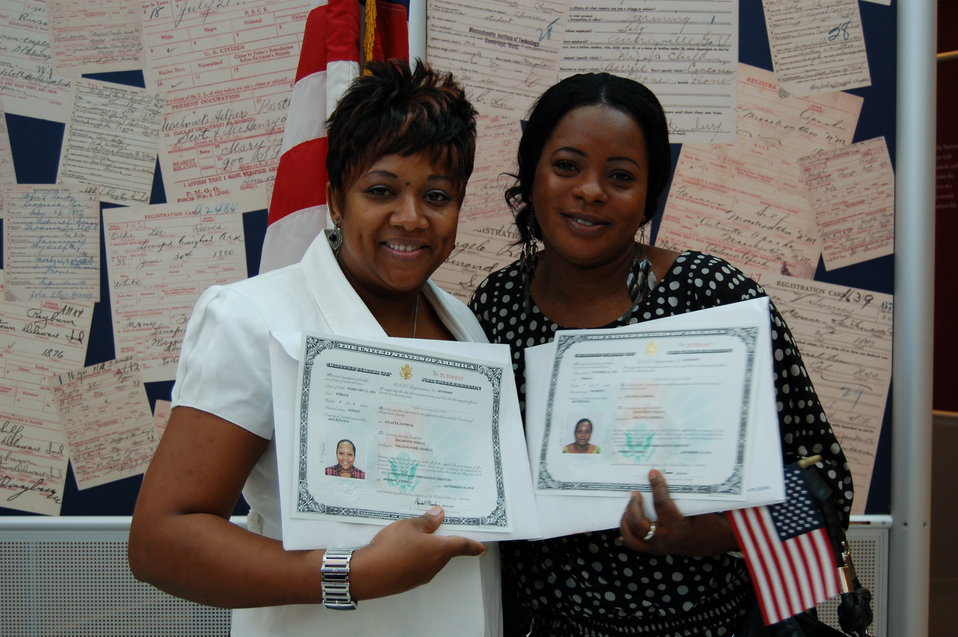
New Citizens